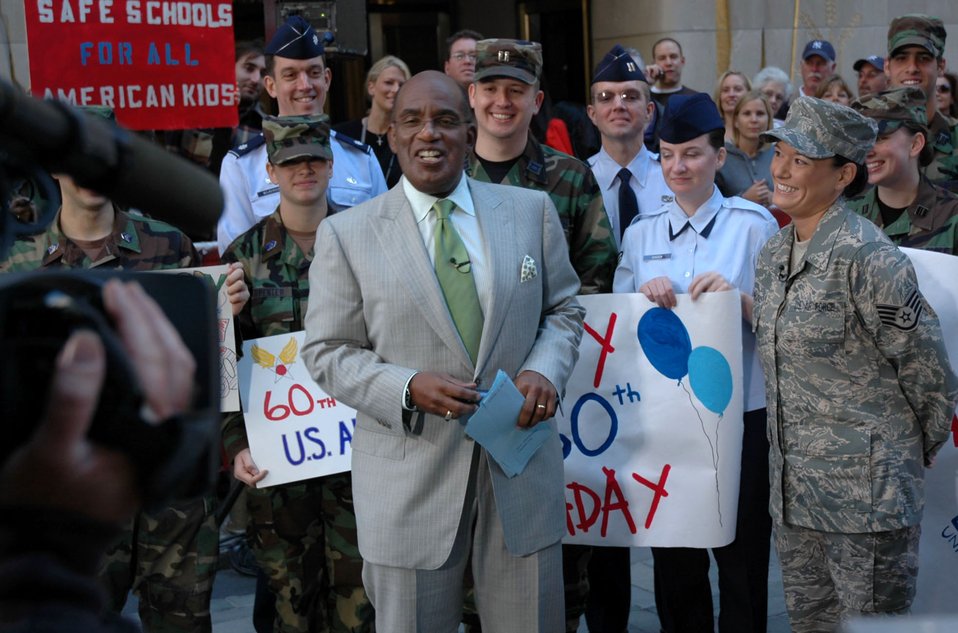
New York City salutes Air Force's birthday